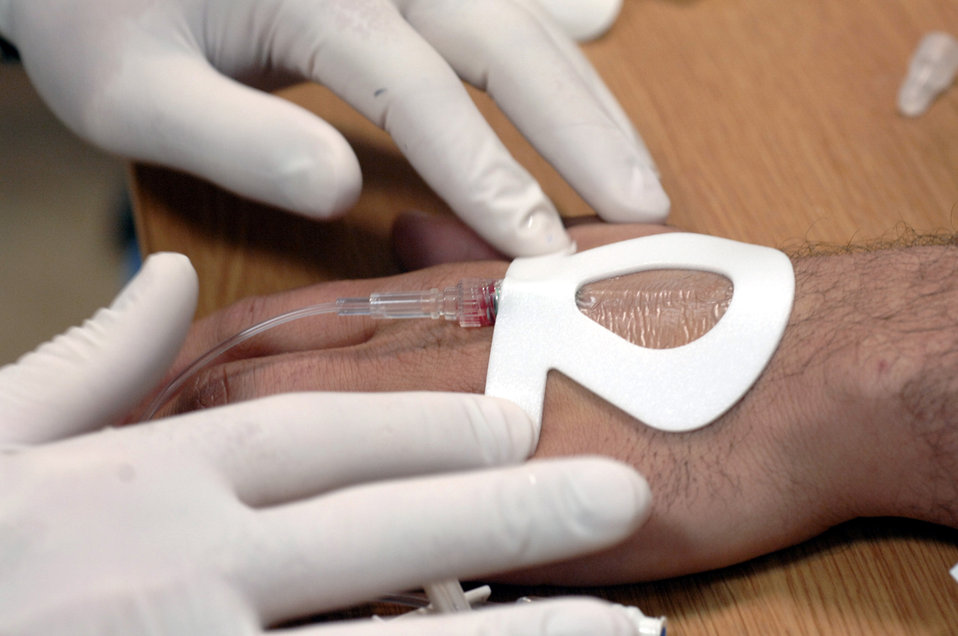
Doctoring downrange

SOUTHWEST ASIA (AFPN) -- Pfc. Martin Robles receives an intravenous tube while receiving care from 379th Expeditionary Medical Group personnel. The unit provides medical care to forward deployed personnel while in theater.